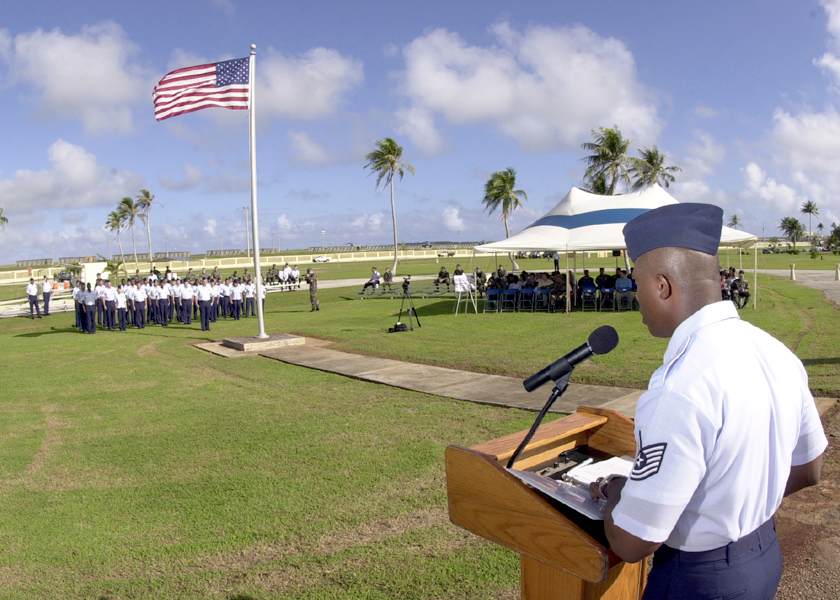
Honoring fallen airmen

ANDERSEN AIR FORCE BASE, Guam -- Tech. Sgt. John Lester reads the names of the 33 airmen killed during the Linebacker II campaign as part of a ceremony here Dec. 18. As each name is read, an airman of Andersen's Network 56 organization in the formation comes to attention to represent that person. Lester is assigned to the 36th Mission Support Squadron.